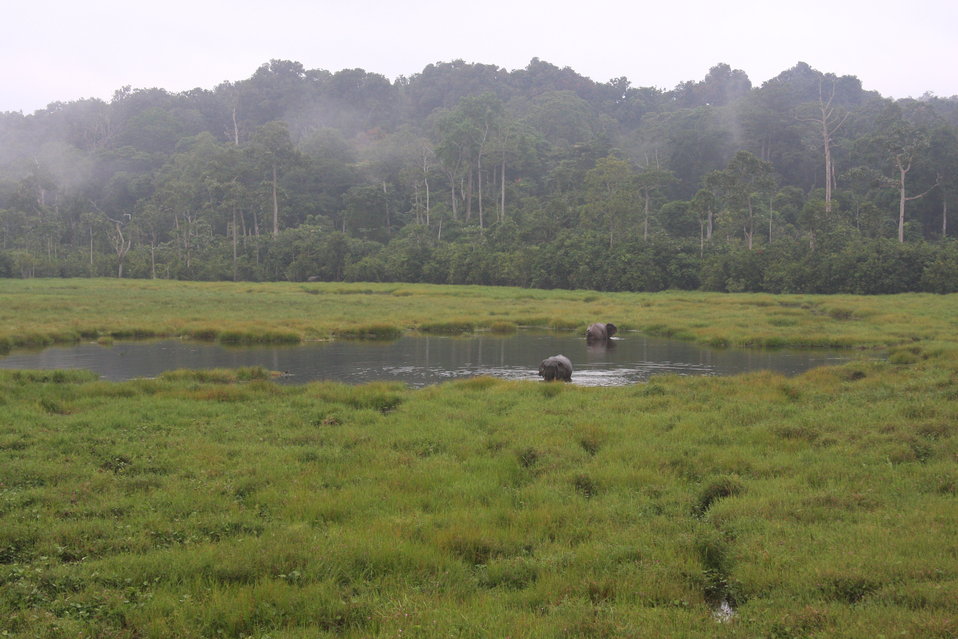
Forest elephants socialize and get minerals at clearings in the rainforest like Mbeli Bai.